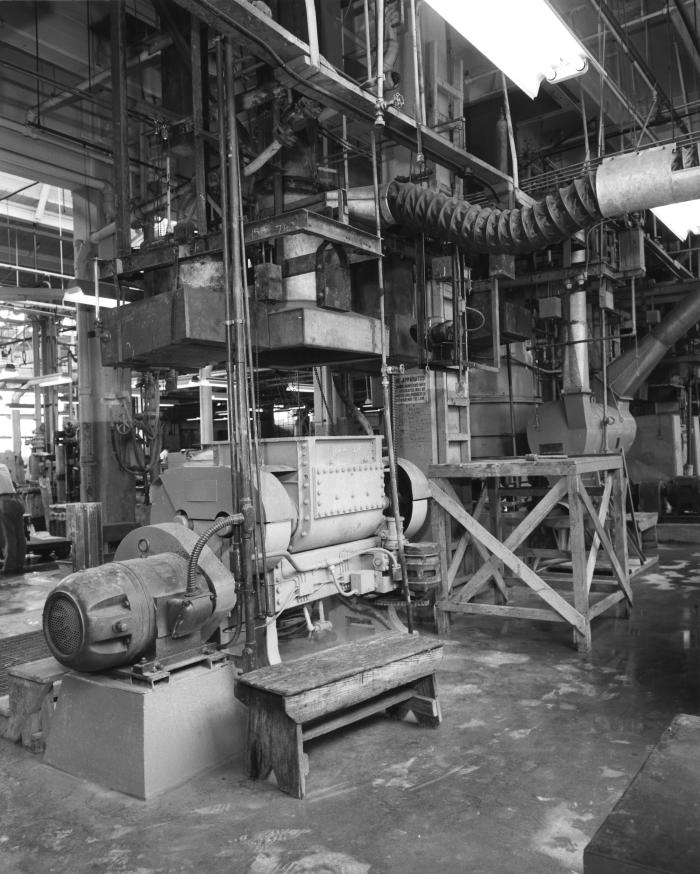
This historic image depicting the interior of the Crown Cork Company battery factory in Baltimore, Maryland, revealed the ventilation units responsible for cleansing, and recirculating the factory's atmosphere, thereby, removing harmful particulates created during the manufacturing process. The photograph was provided by the Center for Disease Control's (CDC), National Institute for Occupational Safety and Health (NIOSH).